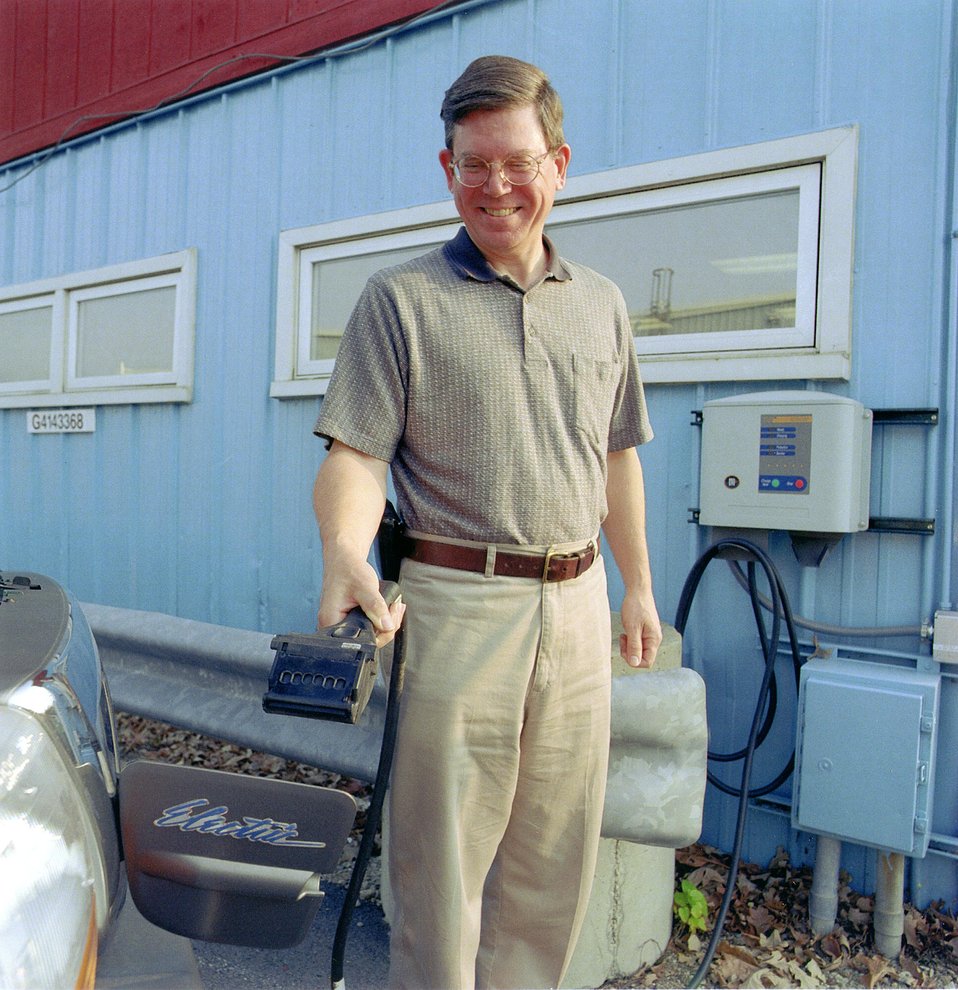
FESS OPERATIONS GROUP MANAGER DEMONSTRATES PLUG-IN REFUELING ON ONE FERMI'S ELECTRIC TRUCKS.

IN ORDER TO CUT DOWN ON THE USE OF PETROLEUM BASED FUELS, FERMILAB IS DEVELOPING A FLEET OF VEHICLES WHICH INCLUDES ELECTRIC VEHICLES AND ALTERNATIVE FUEL VEHICLES. SHOWN IS AN ELECTRIC FORD RANGER ZERO EMISSION VEHICLE.